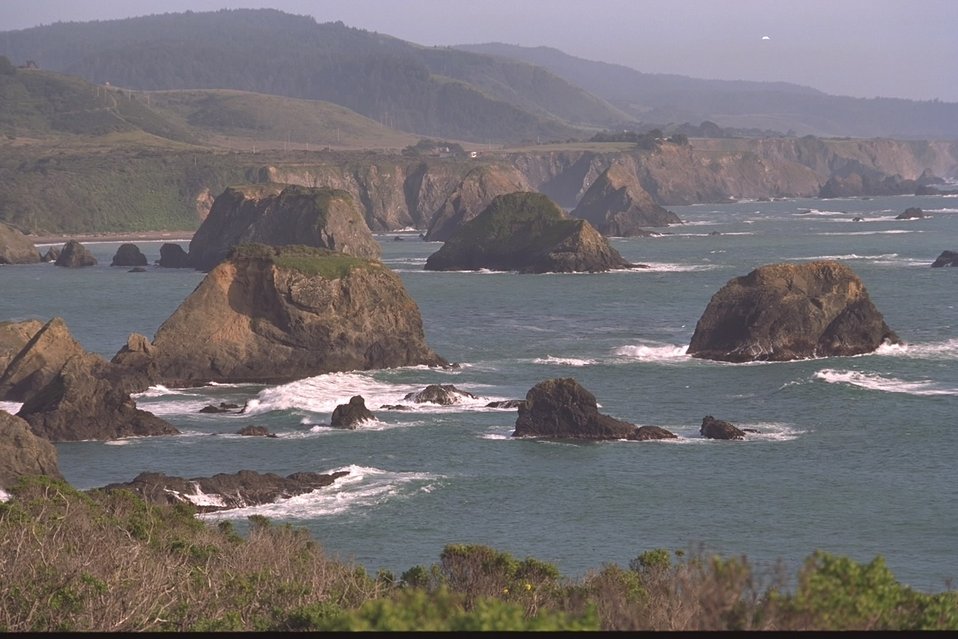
California coastal national monument